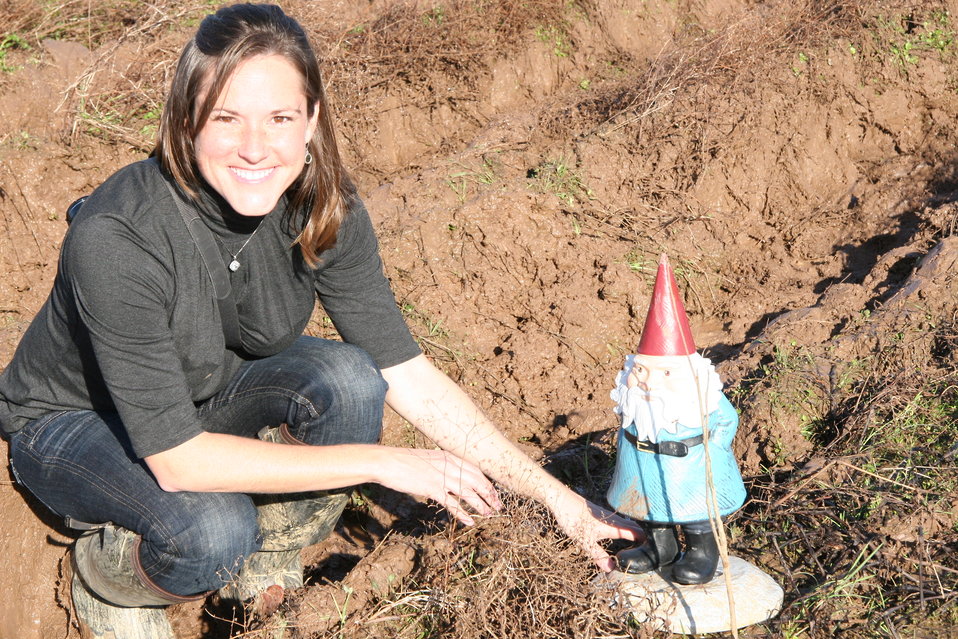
Jena Meredith

Jena Thompson Meredith, The Conservation Fund’s Go Zero Director, poses with the Travelocity mascot and a newly planted tree on Grand Cote National Wildlife Refuge in Louisiana. Travelocity is one of the partners who helped fund the planting, raising money from customers seeking to neutralize their carbon footprint.

To learn more about the carbon mitigation techniques being used at Grand Cote and Lake Ophelia, read our blog post, 'Louisiana: Re-planting Forests, Reducing CO2 and Saving Wildlife'